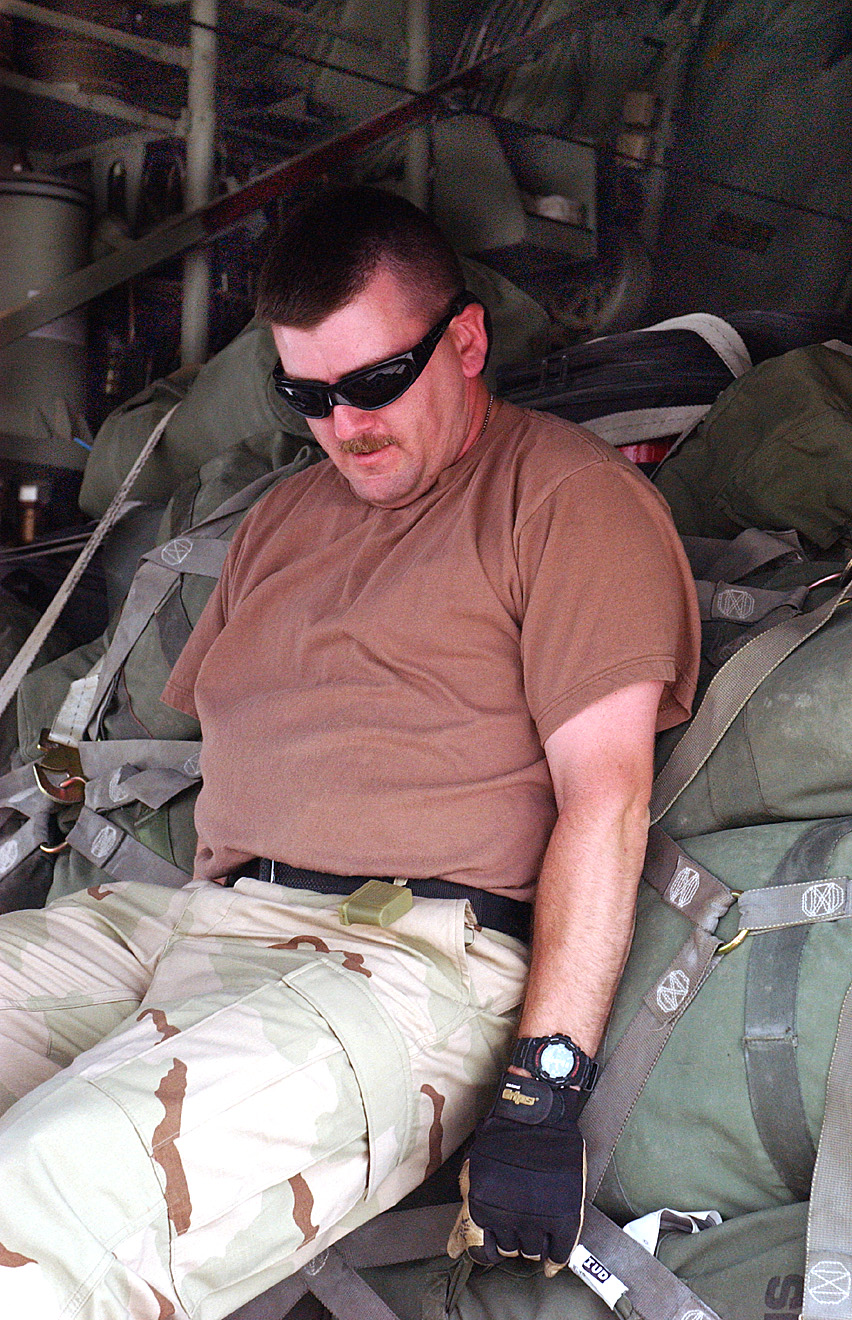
Pushing freight: ATOC moves cargo in, out of Ali quickly

Staff Sgt Joe Lankford pushes a baggage pallet onto a C-130 Hercules on the ramp at Ali Base, Iraq. Sergeant Lankford works in the Air Terminal Operations Center and is assigned to the 407th Expeditionary Logistics Readiness Squadron.